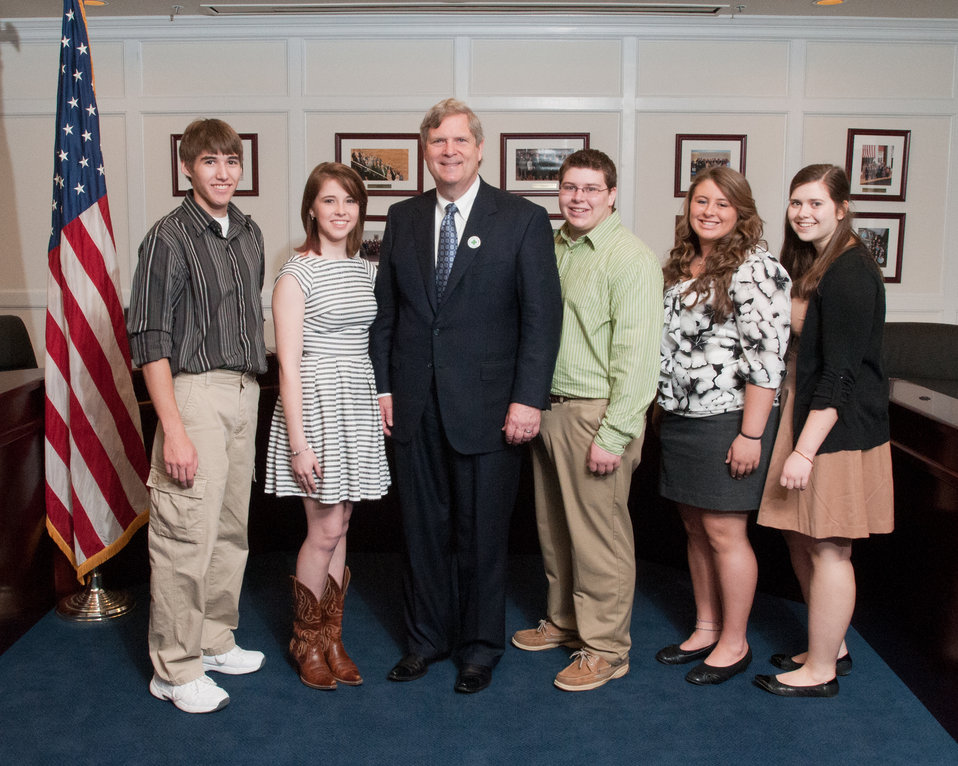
U.S. Department of Agriculture (USDA) Secretary Tom Vilsack (center-left) meets with the Youth Leadership Team of (left-right) Michael Sperry (SD), Laura Willis (NC), Ricki Schroeder (OK), Amy Prestholt (IA), and Rachel Fay (NY), during the 2013 National 4-H Conference, on Monday, April 8, 2013 in Chevy Chase, MD. The youth delegates are in grades 10-12 (15-19 years old). The purpose of the conference is to 1) engage 4-H youth in personal development experiences that will increase knowledge, resources, and skills; 2) discuss topics affecting youth and 4-H programming nationwide; and 3) empower and mobilize 4-H youth to create positive social change in their communities in a meaningful and genuine way. The conference also reinforces the rich history of 4-H and its valuable tie to USDA, Cooperative Extension and the Land-Grant University System.